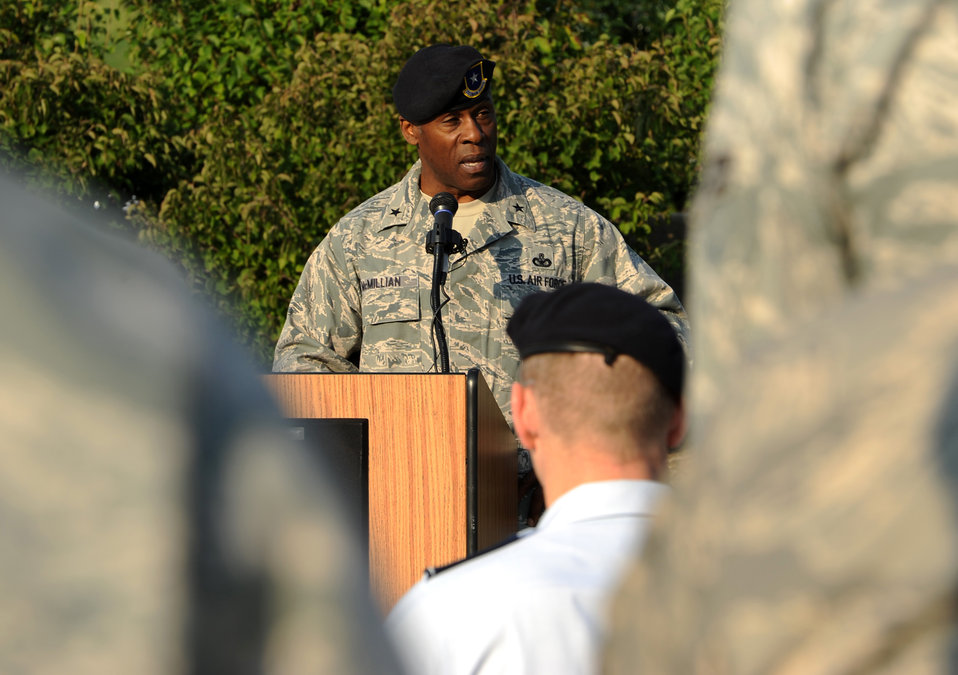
Ceremony kicks off NCR leg of 9/11 Ruck March to Remember

Brig. Gen. Jimmy McMillian, the Air Force’s director of security forces, speaks during a wreath laying ceremony at the Pentagon on Aug. 29, 2011. McMillian asked the audience, which was made up of security forces members from across the national capital region, to never forget the memories and sacrifices of fallen security forces Airmen and other Americans.